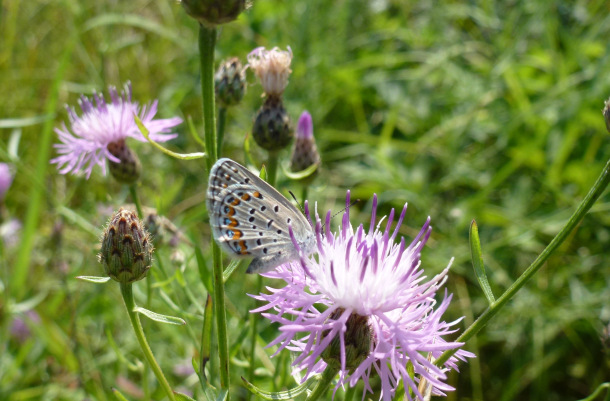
Photo of the Week - Karner Blue Butterfly (NY)

Photo of the Week - 8/19/13

This is the tiny but elegant Karner blue butterfly, a species whose population has been declining over the years. In today's #WordPress feature, USFWS New York Field Office's Bethany Holbrook shows you how we are working to help these butterflies on their road to recovery in New York. As a bonus, there is also some great video of a butterfly release! bit.ly/14L2w01